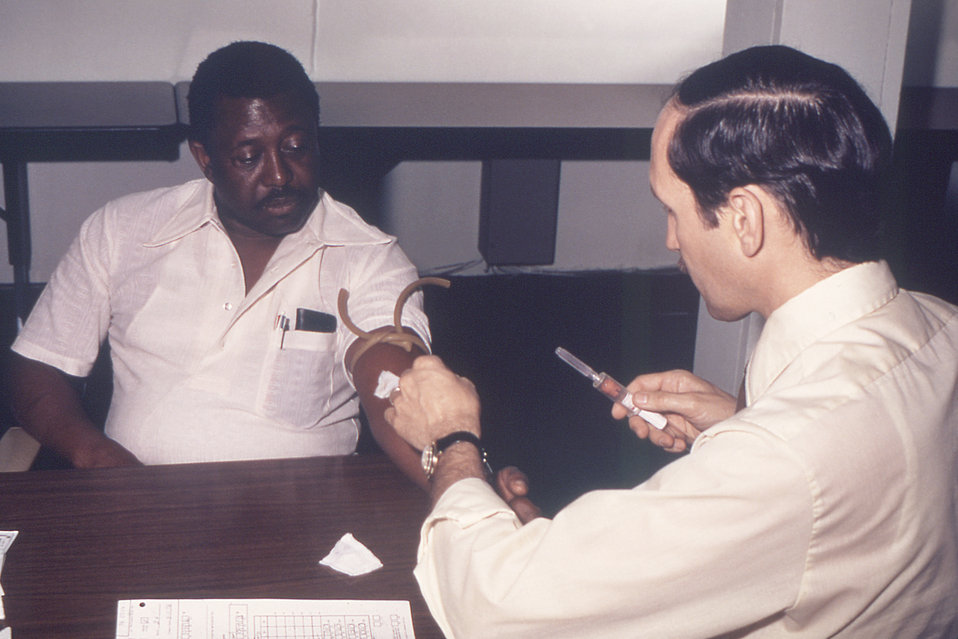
From 1976, this photograph depicted Dr. Gary Noble as he was preparing to draw blood from a male patient that would be tested for its concentration of influenza antibodies. This image was captured during the National A/New Jersey/76 Influenza Study Program.